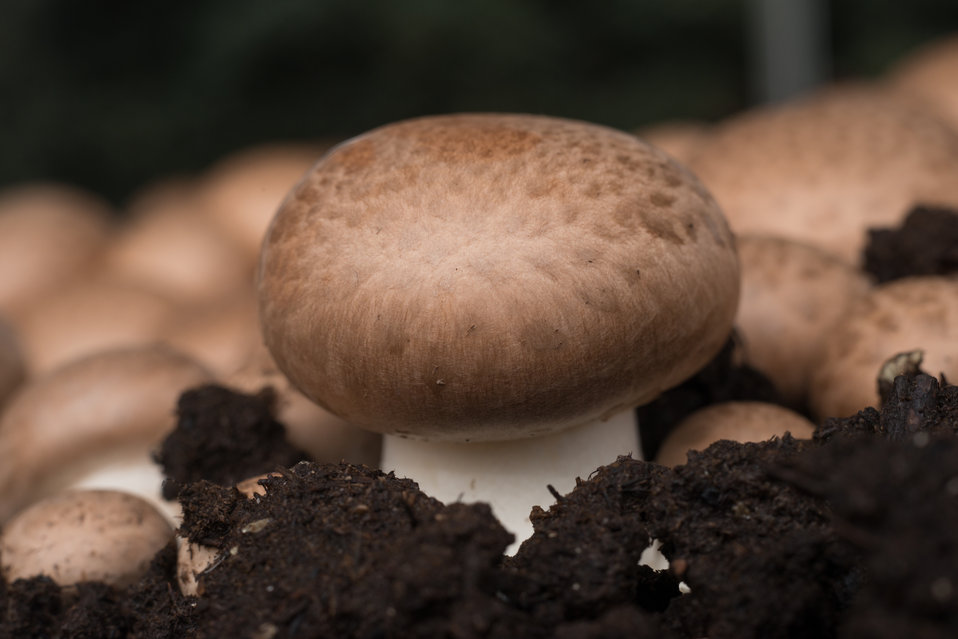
Crimini mushrooms in a growing medium on display at the U.S. Department of Agriculture (USDA) farmers markets and Harvest Festival at the USDA Whitten Building east parking lot in Washington, DC, on Friday, November 22, 2013.